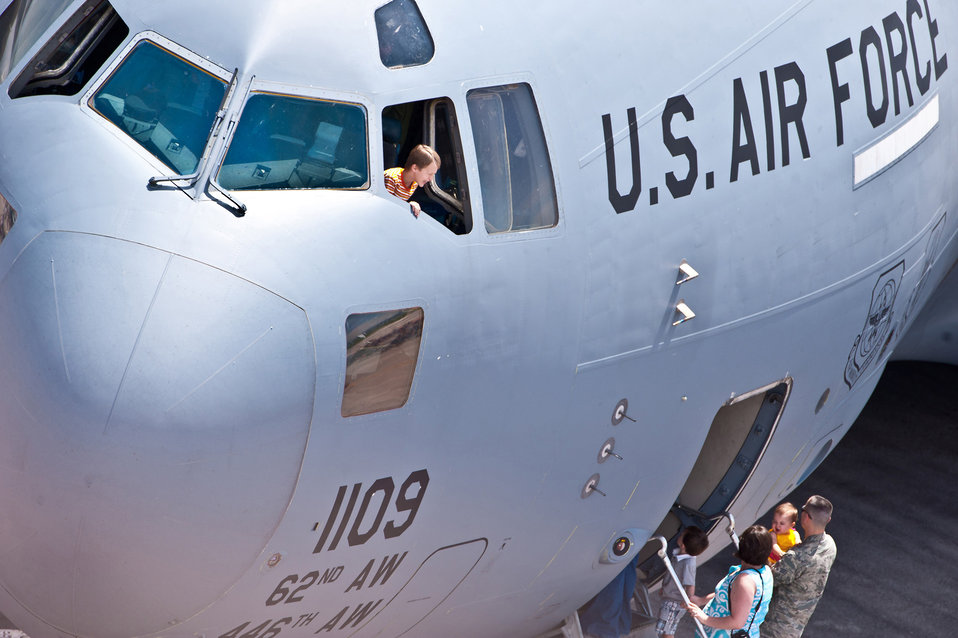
2011 Dakota Thunder air show

A boy looks down at his parents from the cockpit of a C-17 Globemaster III static display June 4, 2011, during the 2011 Dakota Thunder air show at Ellsworth Air Force Base, S.D.